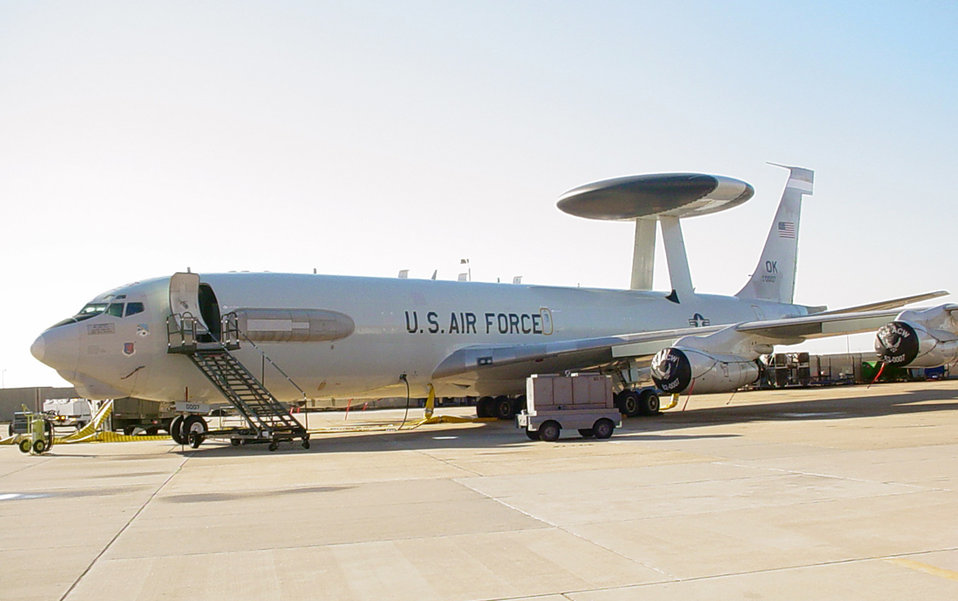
Major AWACS upgrade

The first E-3 Sentry, or Airborne Warning and Control System aircraft to receive the block 40/45 upgrade sits Nov. 18, 2010, outside the programmed depot maintenance hangar at Tinker Air Force Base, Okla., awaiting pre-checks prior to PDM and the installation of the upgrade.